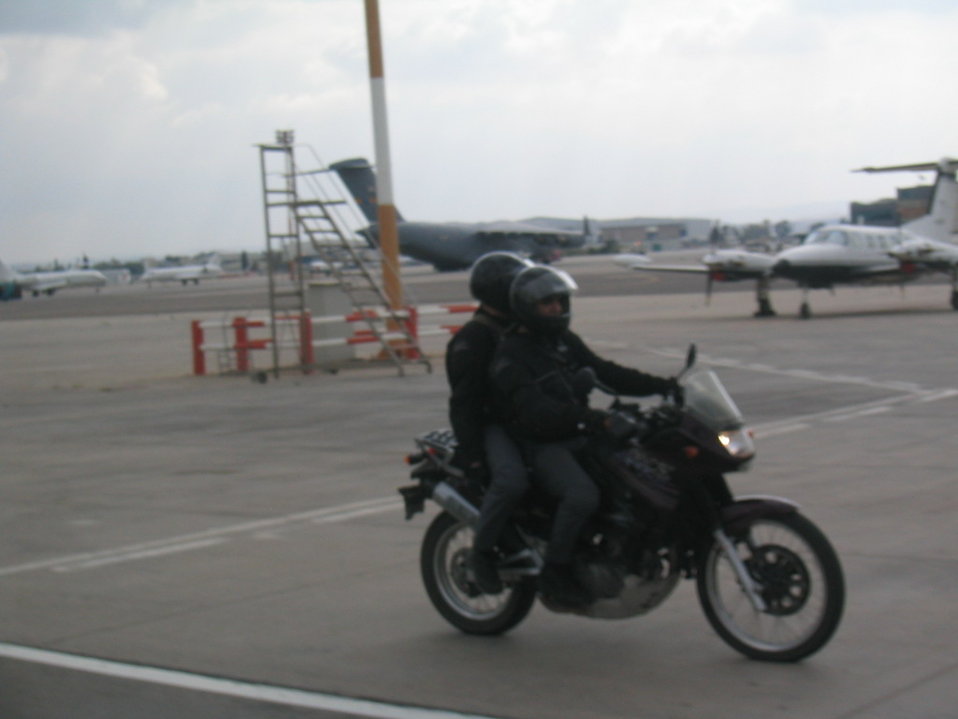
Yasam Motorcyclists on Security Detail with First Lady Laura Bush (May 2005)